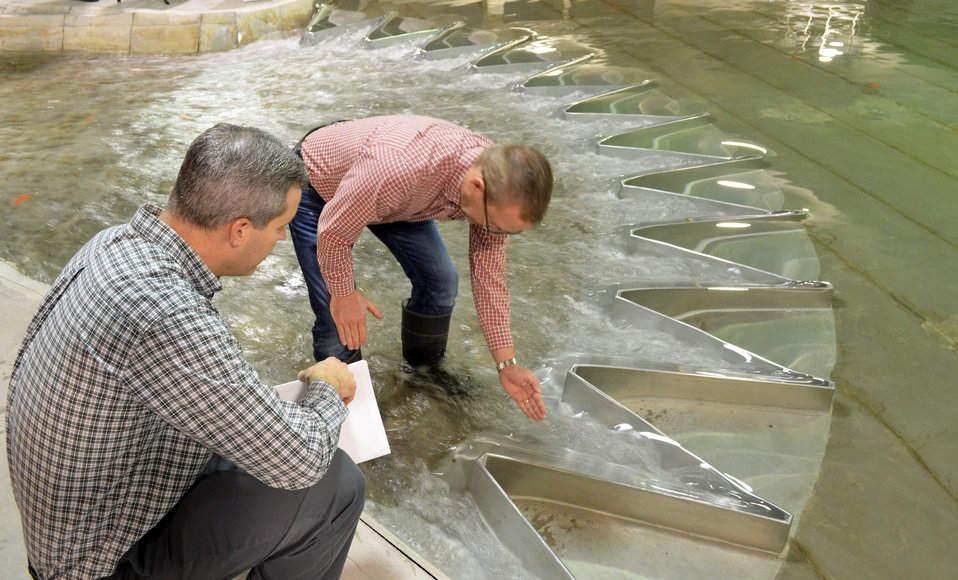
Corps tests new Isabella Dam model

Nathan Cox, a hydraulic engineer with the U.S. Army Corps of Engineers Sacramento District (left), and Dr. Blake Tullis, an associate professor at Utah State University's Water Research Laboratory, observe water flows at the new scale model of the Isabella Dam Safety Modification Project in Logan, Utah, Feb. 13, 2014. The 1:45 scale model is an essential part of the Corps’ pre-construction engineering and design phase and allows engineers to test the design against extreme storms and improve it before construction begins. Construction is scheduled to begin in 2017.